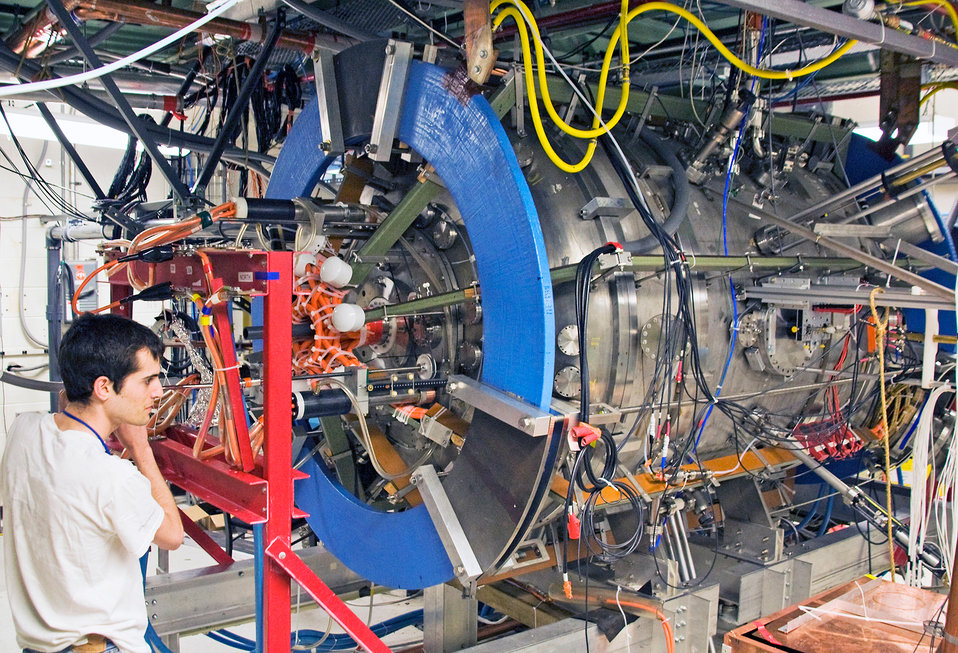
THE MAGNETIC RECONNECTION EXPERIMENT (MRX).

Magnetic Reconnection is the breaking and topological rearrangement of magnetic field lines in plasmas. It is one of the most fundamental processes of plasma physics and has important relevance to fusion research, as well as to the physics of the earth's magnetosphere and solar flares. It may also play a key role in heating the plasma in the solar atmosphere, or solar corona.